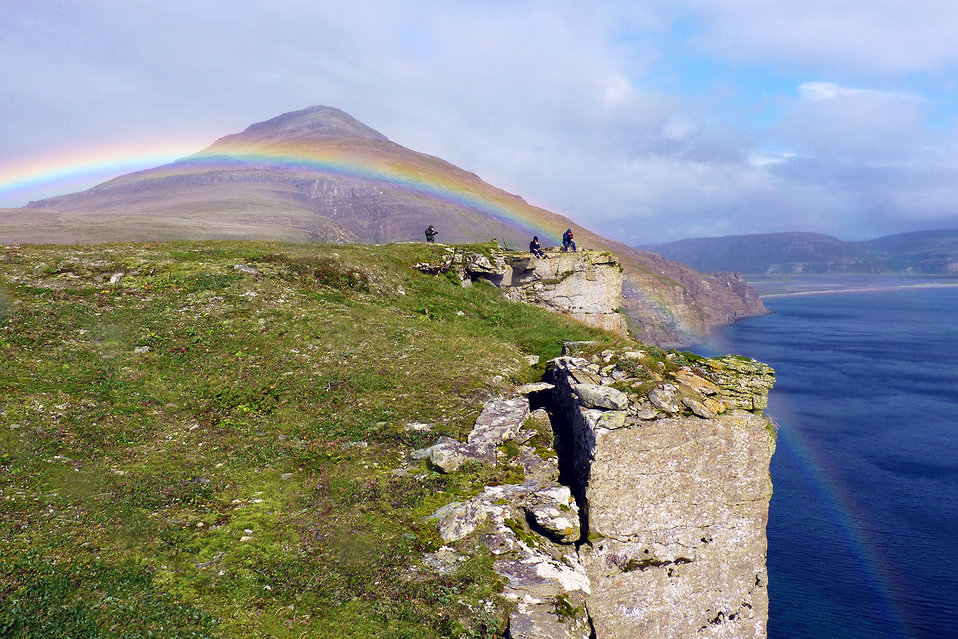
Becharof NWR Julia Pinnix USFWS

Every summer seabirds nests on the sheer cliffs of Alaska’s Becharof National Wildlife Refuge, where U.S. Fish and Wildlife staffers conducting a seabird census get stunning views of Puale Bay.